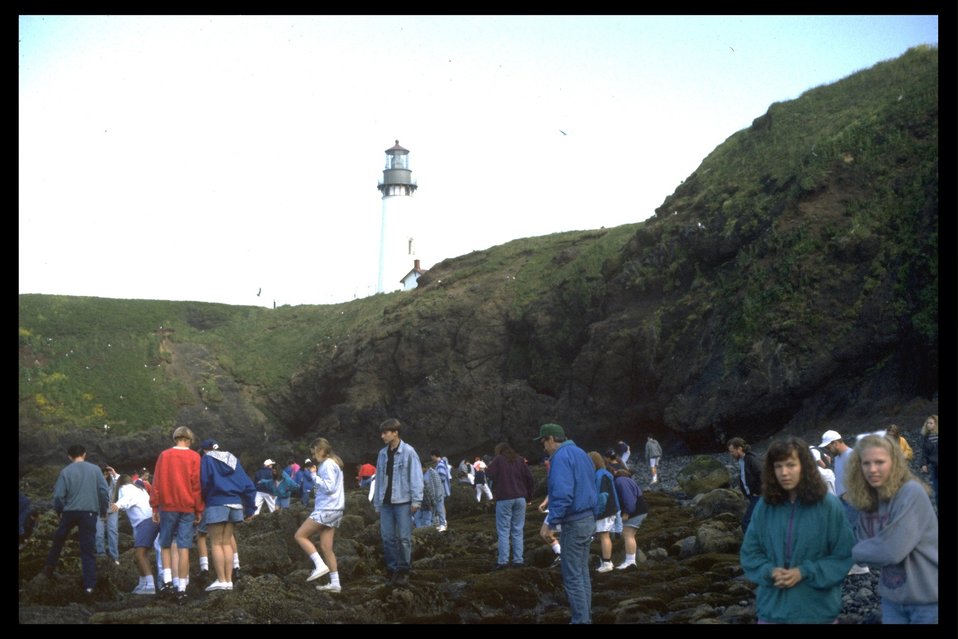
Tidepooling on Cobble Beach.